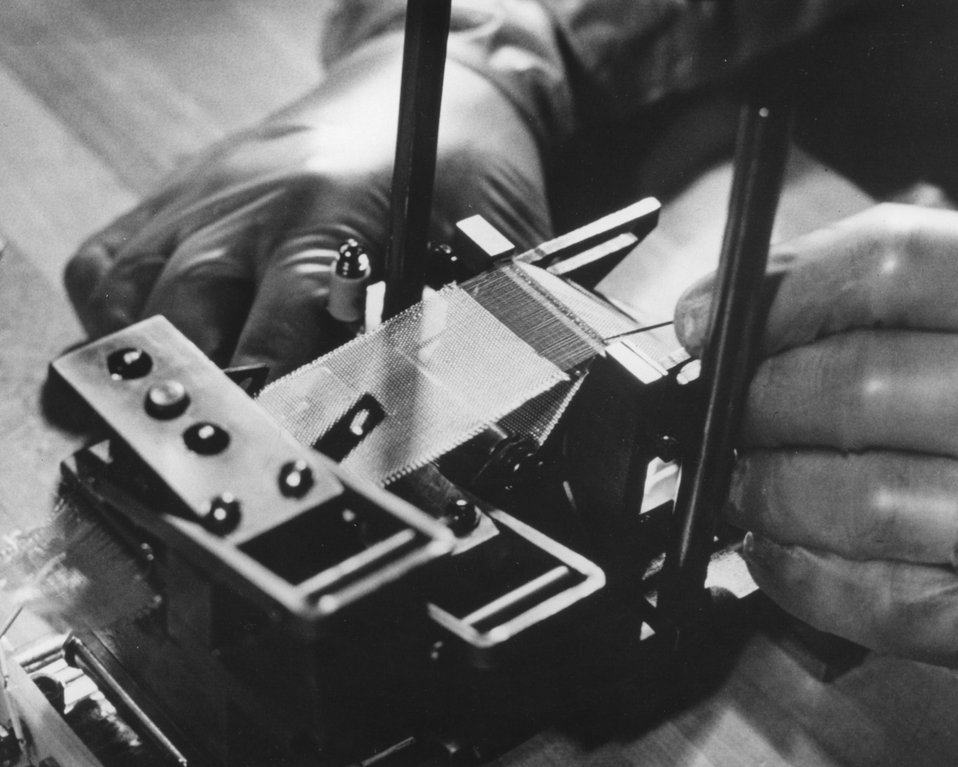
Assembly of ribbon of thermocouples to be wound around a central core containing the plutonium-238 heat source. Circa 1971.